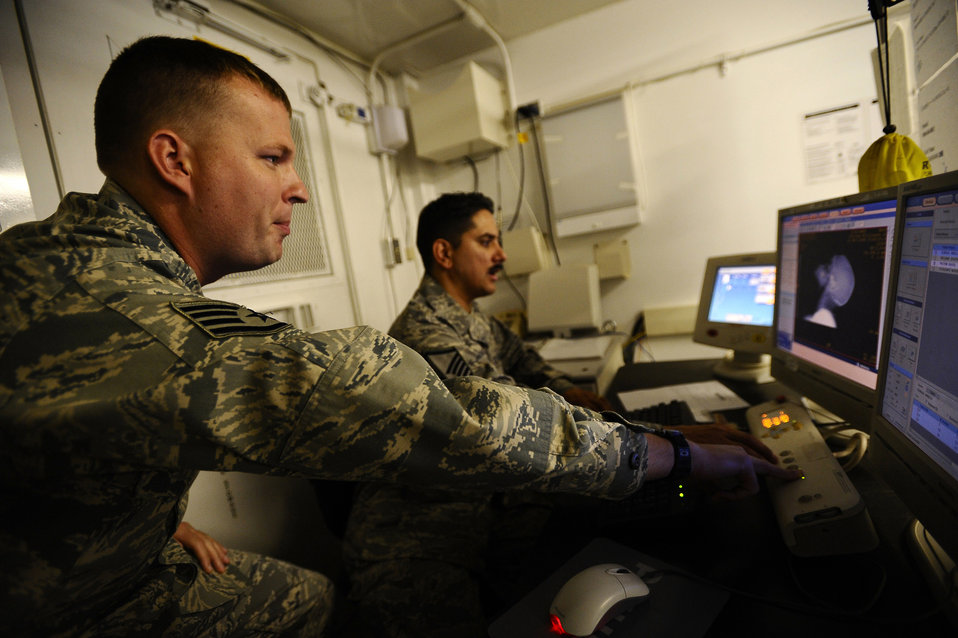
I can see right through you

Staff Sgt. Joshua Livingston instructs Master Sgt. Oscar Sotomayor where to put scan planes on a patient during a CT scan Nov. 21 at Joint Base Balad, Iraq. The CT scan will aid doctors in diagnosing medical conditions that the patient may have. Sergeant Livingston is assigned to the 332nd Expeditionary Medical Support Squadron and deployed from Keesler Air Force Base, Miss. His hometown is Rapid City, S.D. Sergeant Sotomayor, the NCO in charge of diagnostic imaging with the 332nd Expeditionary Medical Support Squadron and a native of San Antonio, is deployed from Langley AFB, Va.